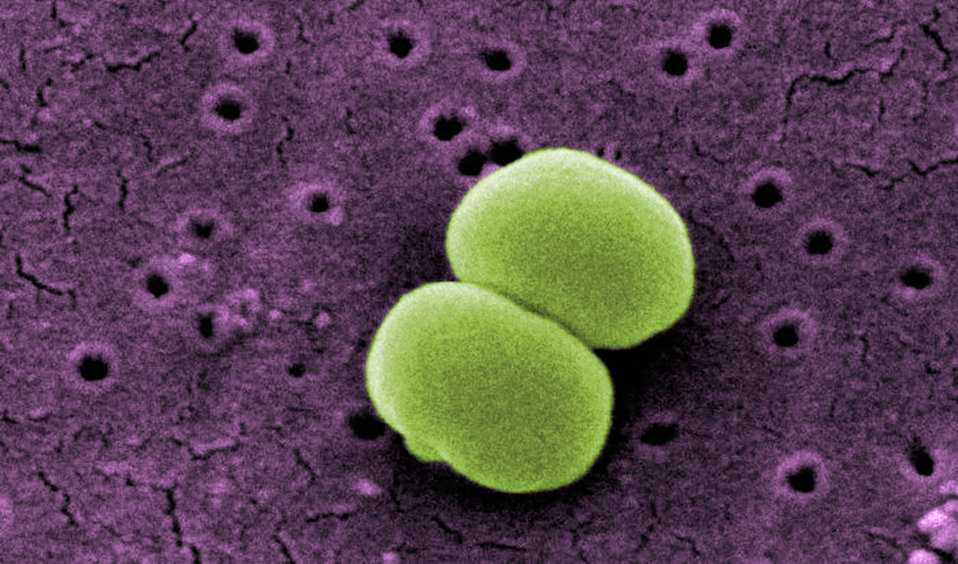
This colorized version of PHIL 259, depicts a scanning electron micrograph (SEM) of two Staphylococcus epidermidis bacteria.